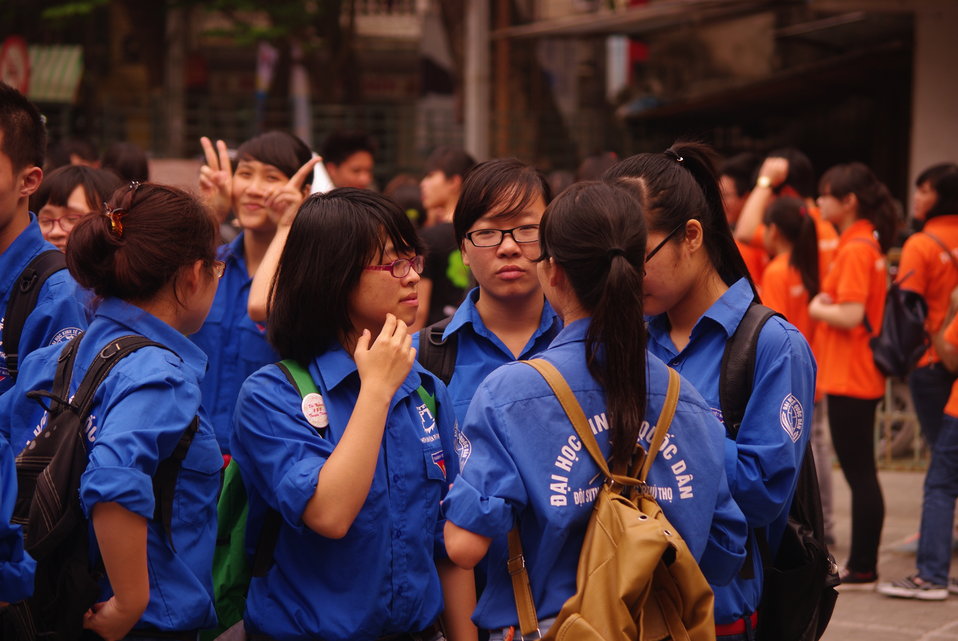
Youth Union Members at the World TB Day Event in Hanoi

March 23, 2013